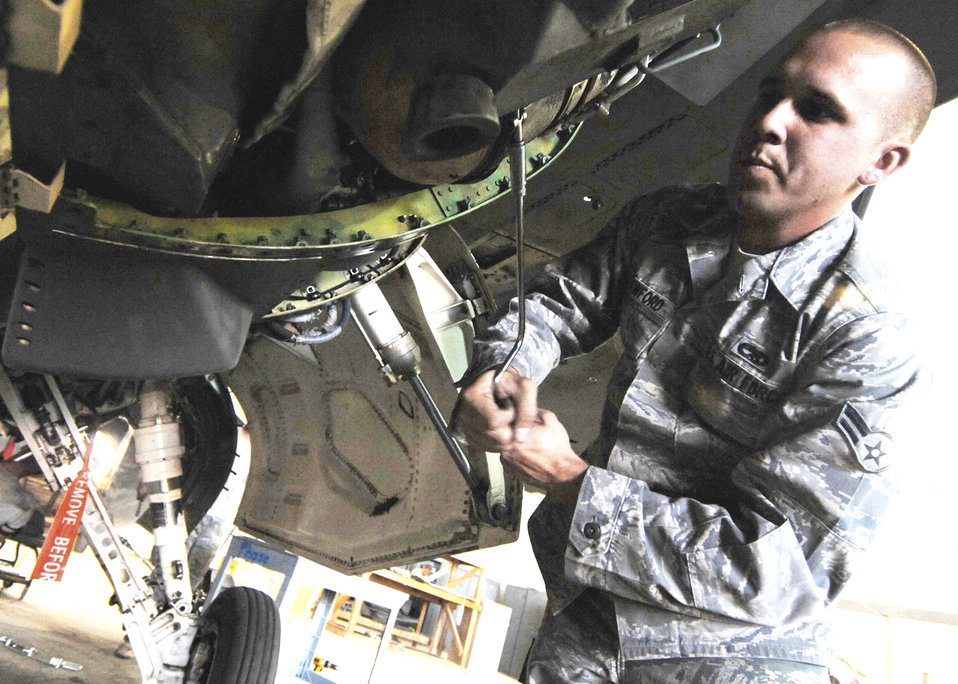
Balad maintainers keep F-16s flying

Airman 1st Class Kyle Crawford, 332nd Expeditionary Maintenance Squadron electronics and environmental systems specialist, installs parts of a new environmental control system for an F-16 Fighting Falcon Oct. 20, 2009 at Joint Base Balad, Iraq. Electronics and environmental systems specialists are responsible for all environmental control and oxygen generating systems on the F-16.